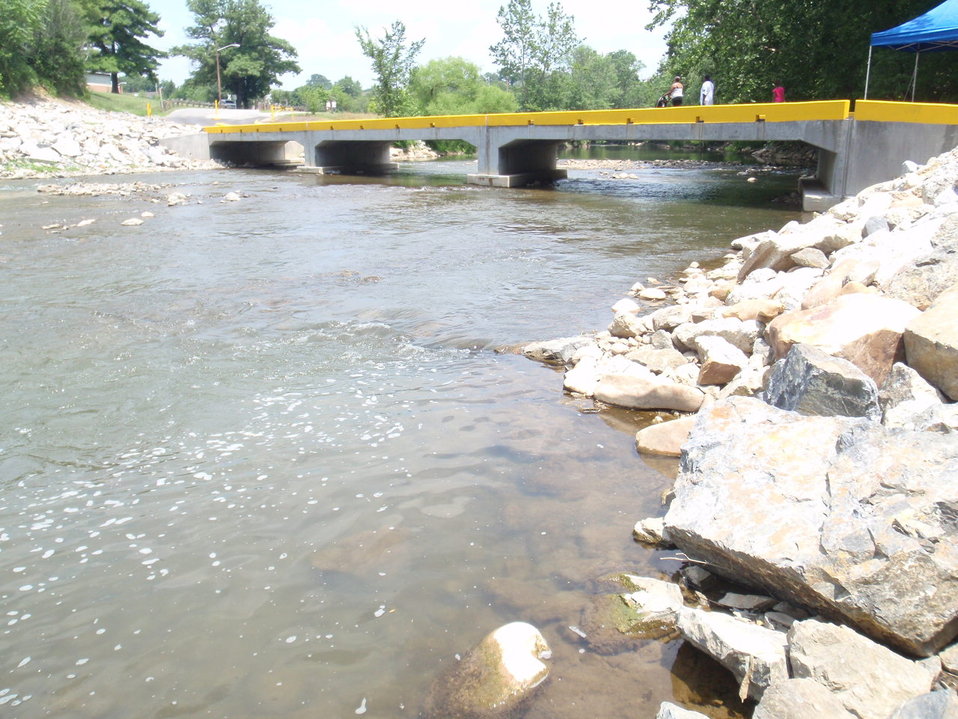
Wiley Drive Bridge Replacement

The new bridge installed at Wiley Drive in Roanoke, Virginia, permits unobstructed passage of fish and directly benefits the Roanoke logperch that occupies this stretch of river.